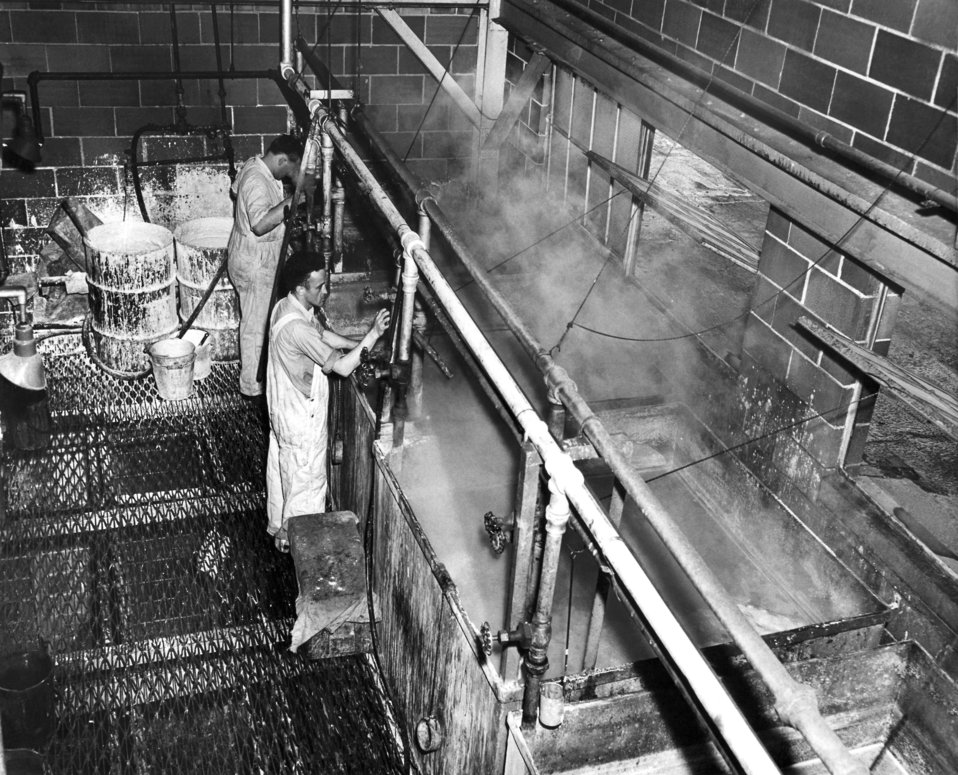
This historical photograph, provided by the Center for Disease Control's (CDC), National Institute for Occupational Safety and Health (NIOSH), depicted two workers in a milk products processing plant, who were in the process of piping acid-treated whey into the processing tanks, in order to precipitate salt and albumin from the mixture. The whey would subsequently be drained off, and the precipitated salt removed. In this industrial setting, the workers' safety was guaranteed under all the applicable Industrial Codes at that time. Note that the men were not wearing any protective gear including goggles, gloves, or filtered breathing masks. This image was published in the July, 1948 issue of the 'Industrial Bulletin, New York', p. 41.